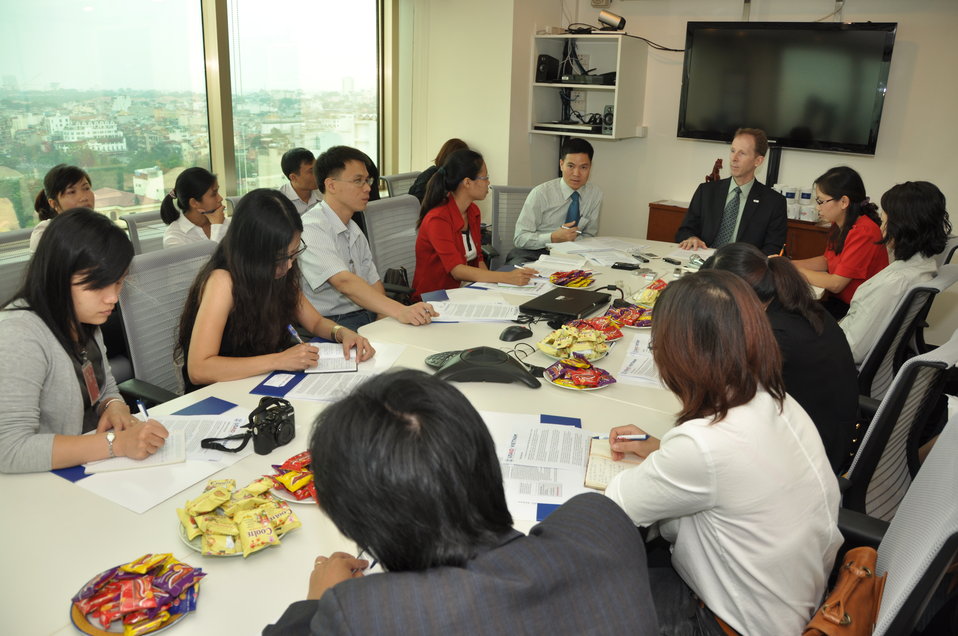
USAID Mission Director Joakim Parker announces climate change awards

October 17, 2012